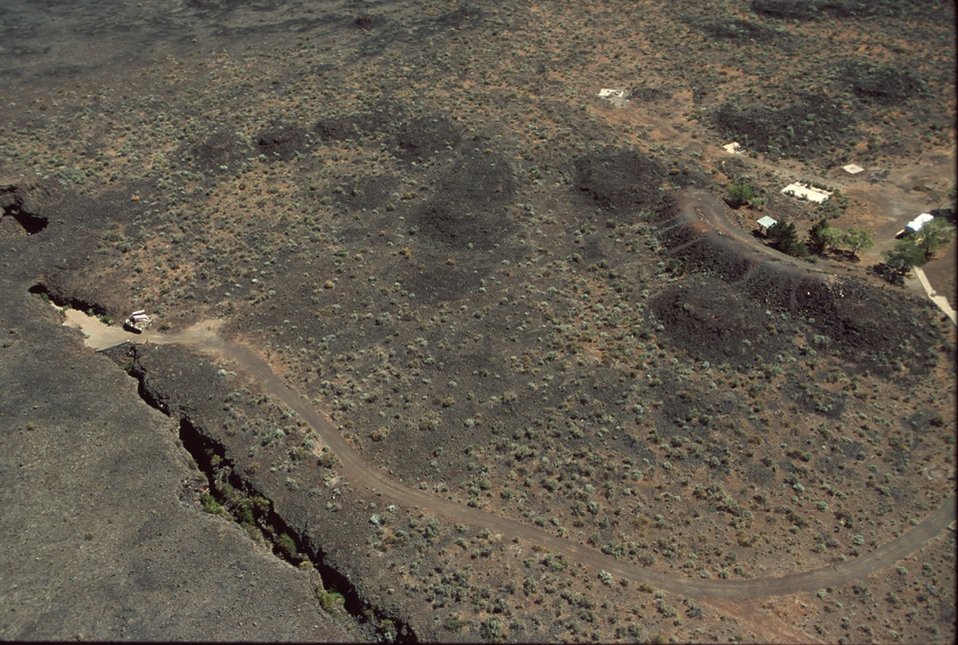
Craters of the Moon National Monument Shoshone Field Office USRD Upper Snake River District